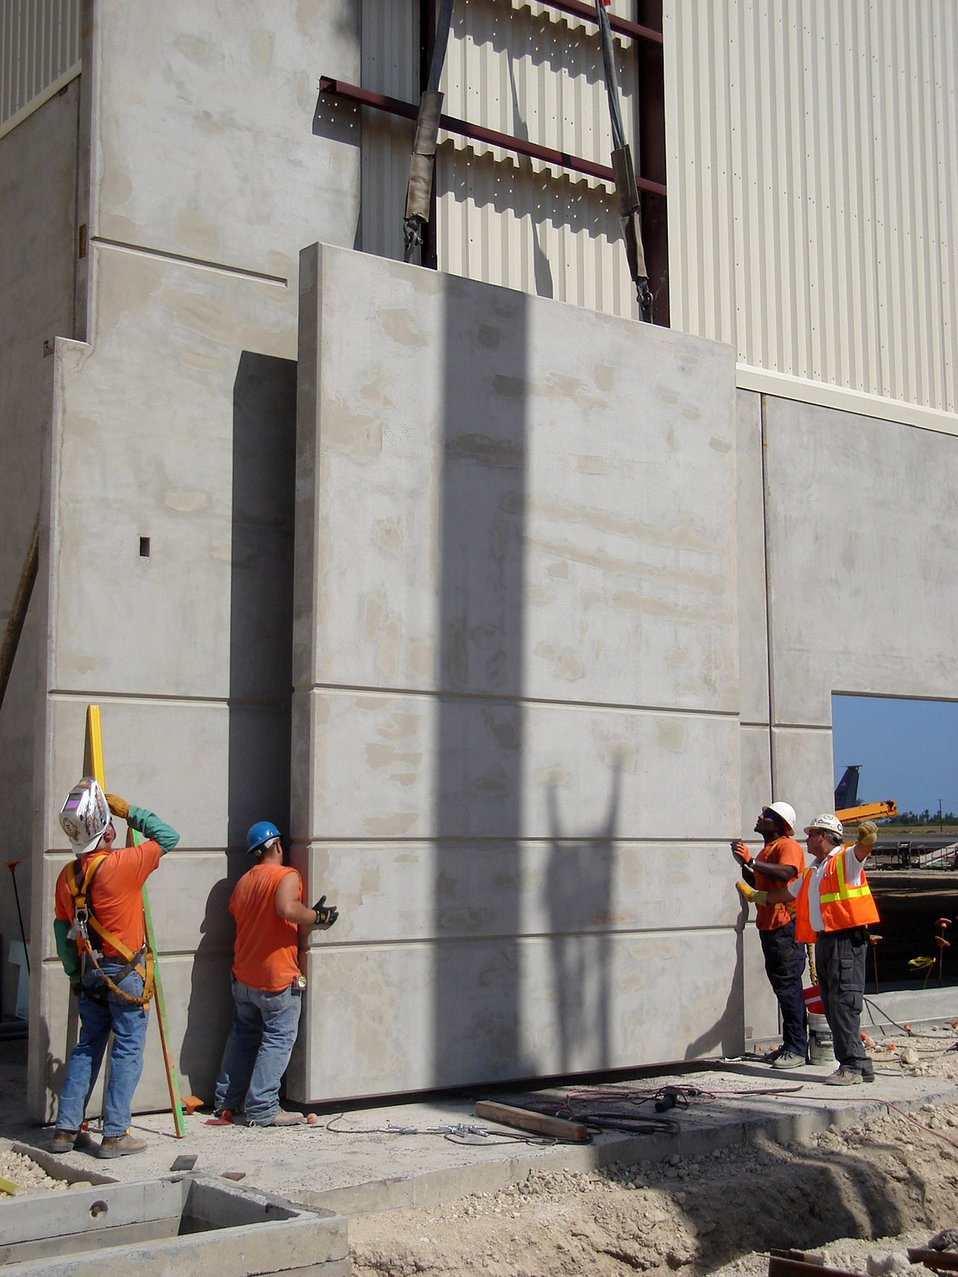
AFCEE builds new C-17 hangar at Hickam

URS employees, contracted by the Air Force Center for Engineering and the Environment, install pre-cast concrete walls as part of the paint booth for the new C-17 Globemaster III Corrosion Control Hangar and maintenance facilities at Hickam Air Force Base, Hawaii. The hangar will be used for painting and general maintenance functions for the eight C-17 aircraft assigned to Hickam AFB.